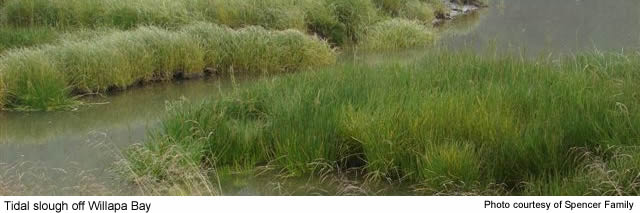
Tidal slough - Willapa NWR

Tidal sloughs are just one distinct type of ecosystems found at Willapa NWR.